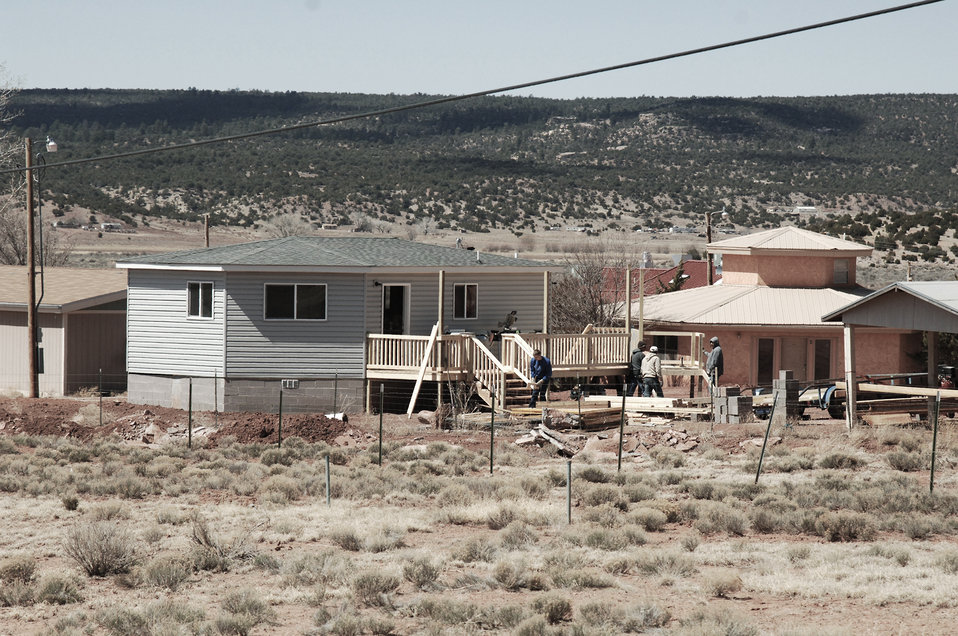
Academy engineers, faculty assist Navajo Nation

U.S. Air Force Academy cadets and faculty work with site managers to help build low-cost housing on the Navajo Reservation in Arizona.